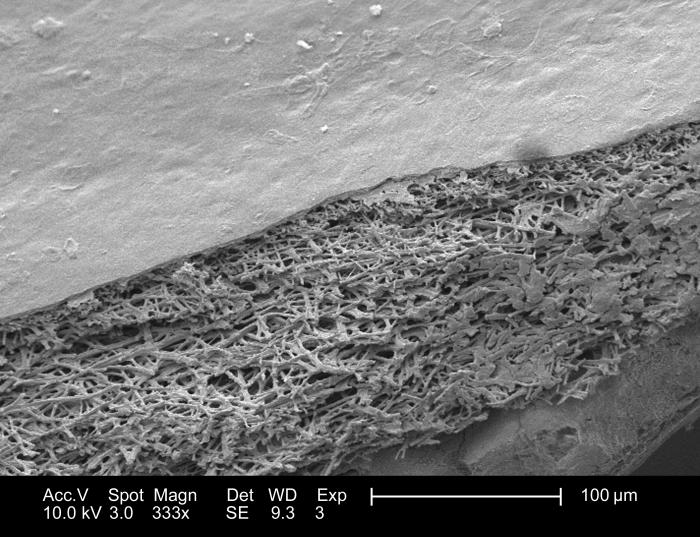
This 2005 scanning electron micrograph (SEM), depicted the morphologic characteristics of the inner surface of an unidentified bird's eggshell. In this view, morphologic details were revealed depicting the smooth innermost layer known as the 'film', which is overlying the more exterior inner and outer membranous layers, which are constructed in a highly trabeculated pattern. Finally, towards the lower right hand corner of the image, you'll note the thick, solidly appearing shell proper, and outermost thin cuticle layer; Magnified 333x.